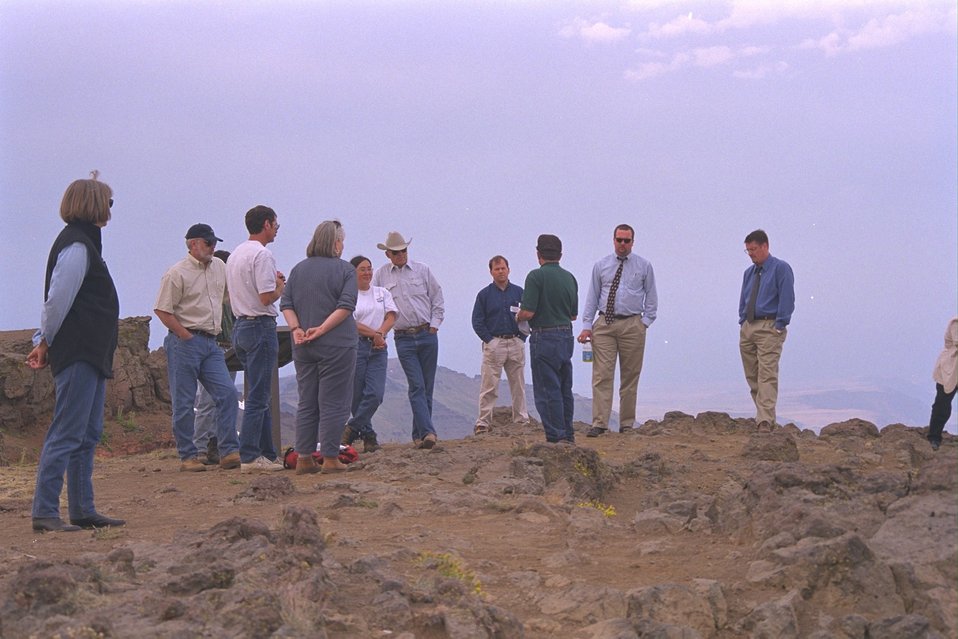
Steens designation tour group at the East Rim viewpoint on the top of Steens Mountain.